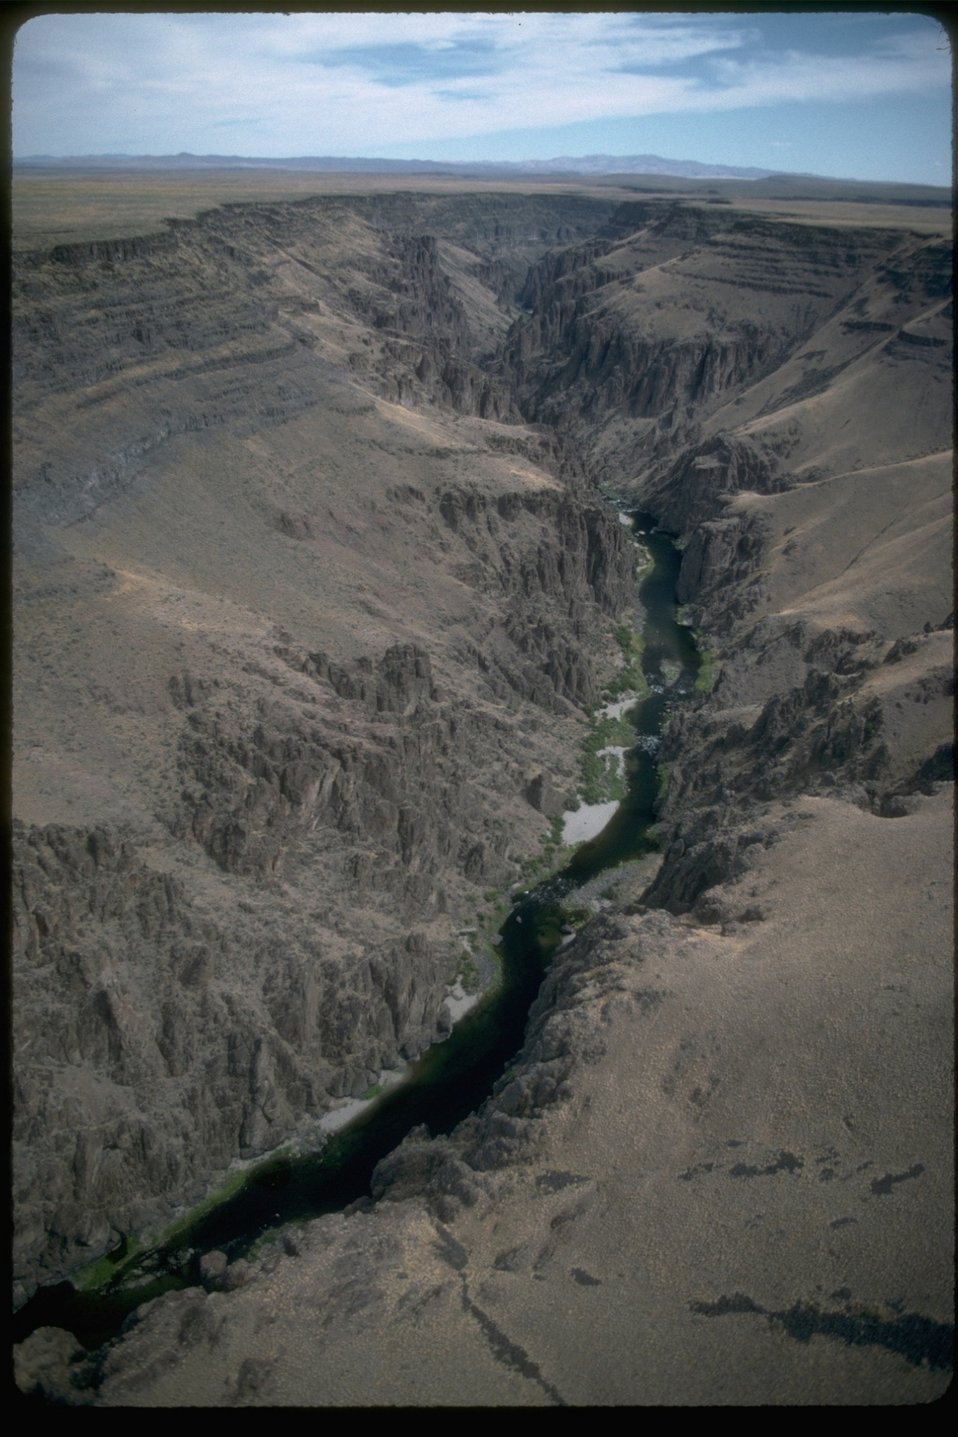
An aerial view of the Owyhee River running through the Owyhee Canyon. OR 3-195